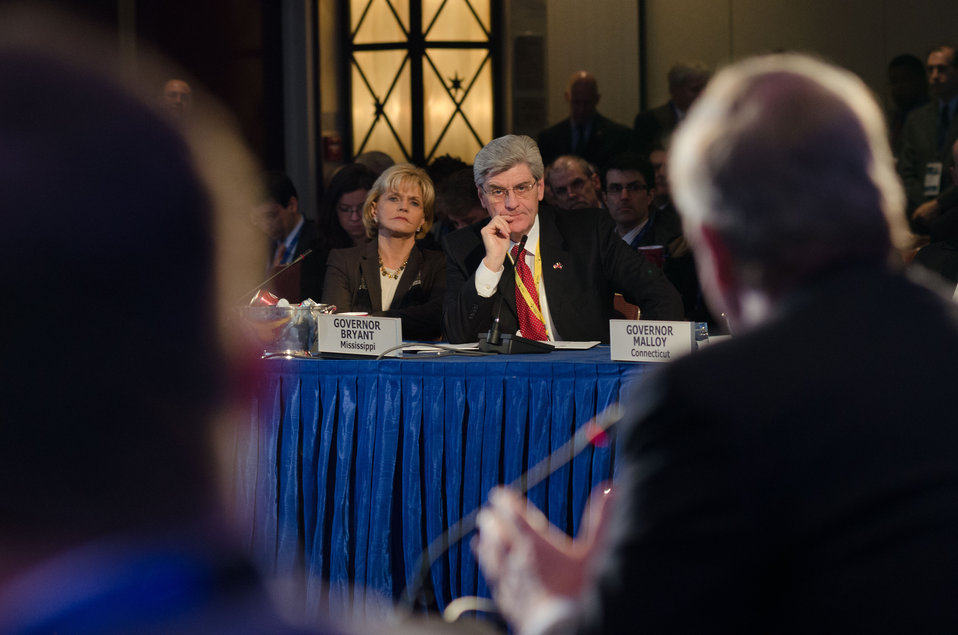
Mississippi - Governor Phil Bryant (center right)) listens to Agriculture Secretary Tom Vilsack's response to his question, during the National Governors Association Education, Early Childhood and Workforce Committee meeting in Washington, D.C., on Sunday, February 26, 2012.